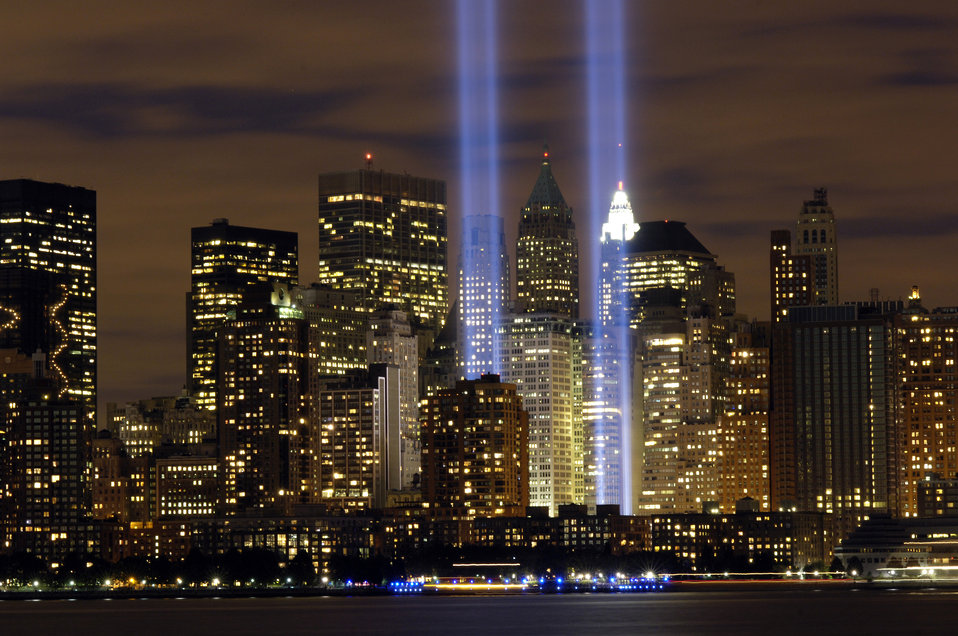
Tribute in Light

The